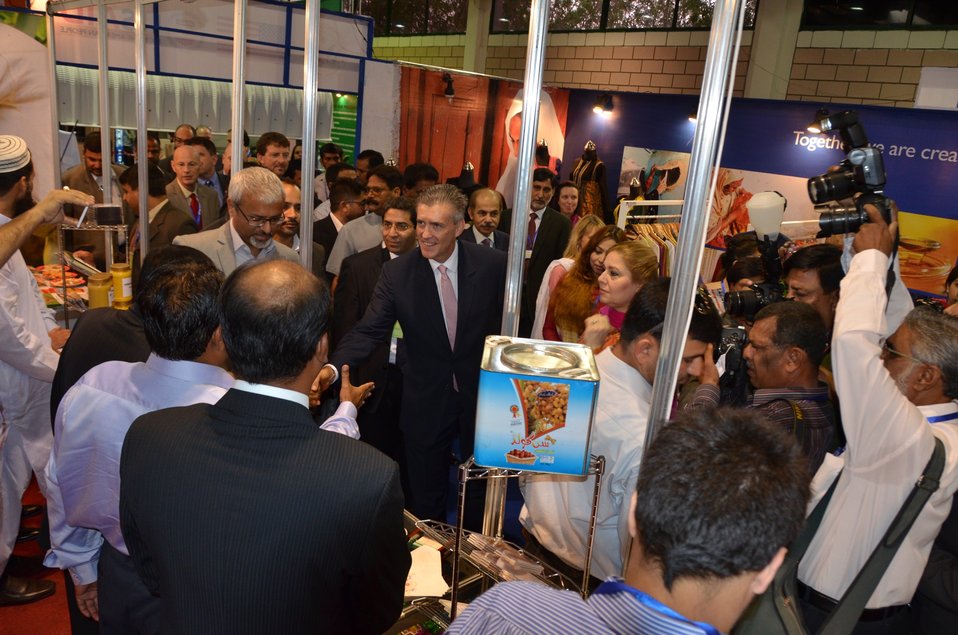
USAID Firms Project at Expo Pakistan 2013

The U.S.Ambassador, Mr. Richard Olson, exchanges thoughts with the Firms Project's partner SMEs, participating at Expo Pakistan 2013